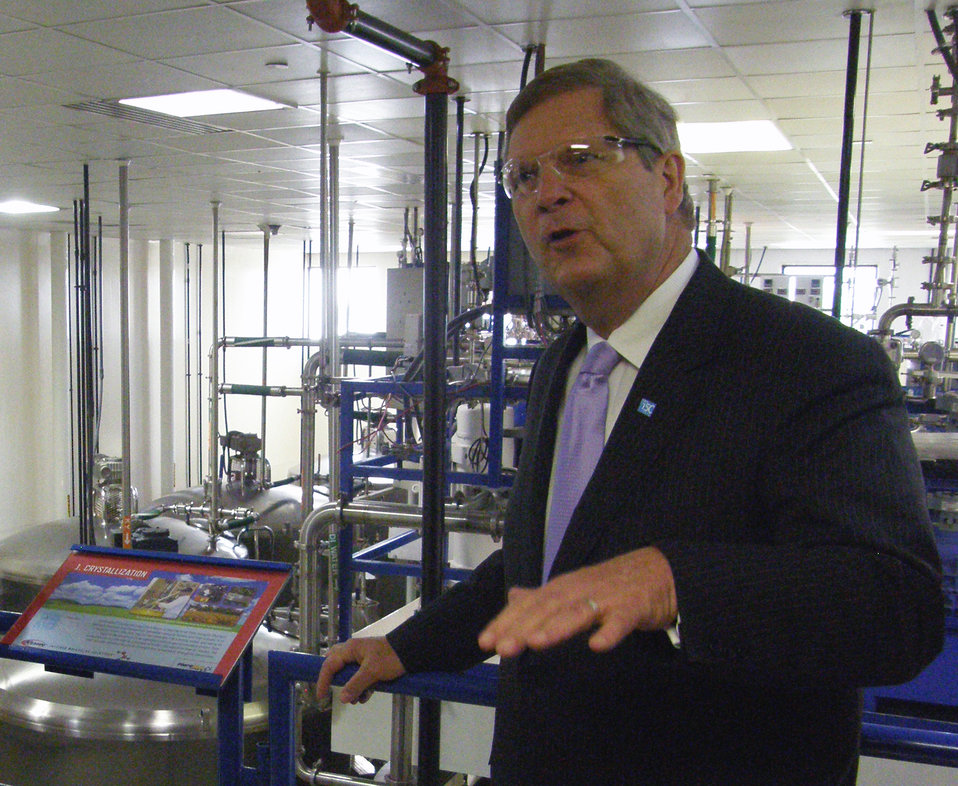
Agriculture Secretary Tom Vilsack toured Kemin Industries in Des Moines, IA on Friday, April 20, 2012. Kemin Industries is an innovative bioscience company that is using plant-based materials to manufacture ingredients used in dietary supplements and in personal care products USDA Photo by Darin Leach.